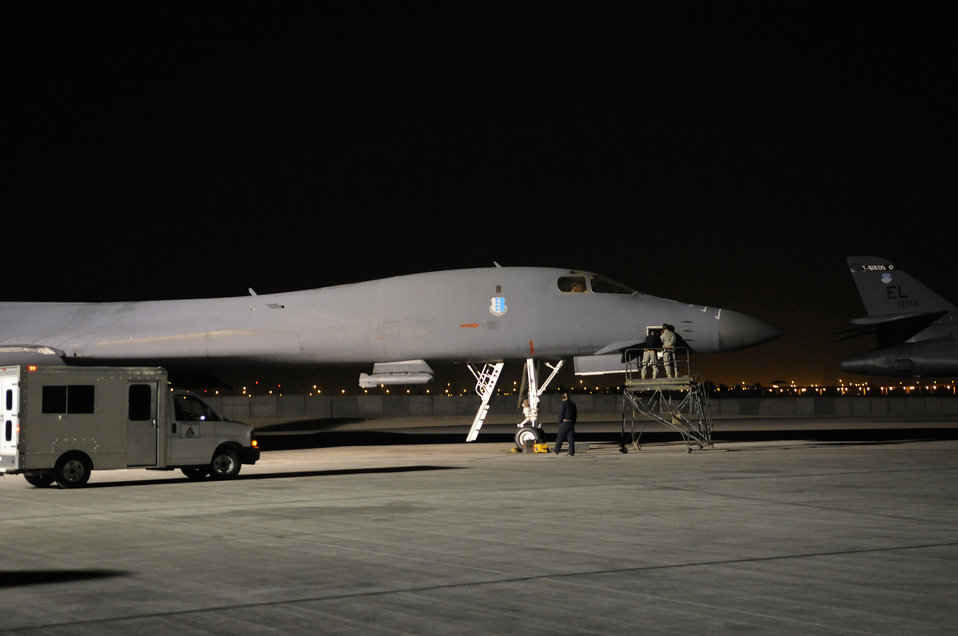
Parts to go

Senior Airman Adam Hall and Senior Airman Peter Yurgin (on maintenance stand) replace a part Dec. 28 on a B-1B Lancer receiving maintenance at an air base in Southwest Asia. The Airmen are aircraft maintenance journeymen assigned to the 379th Expeditionary Aircraft Maintenance Squadron.